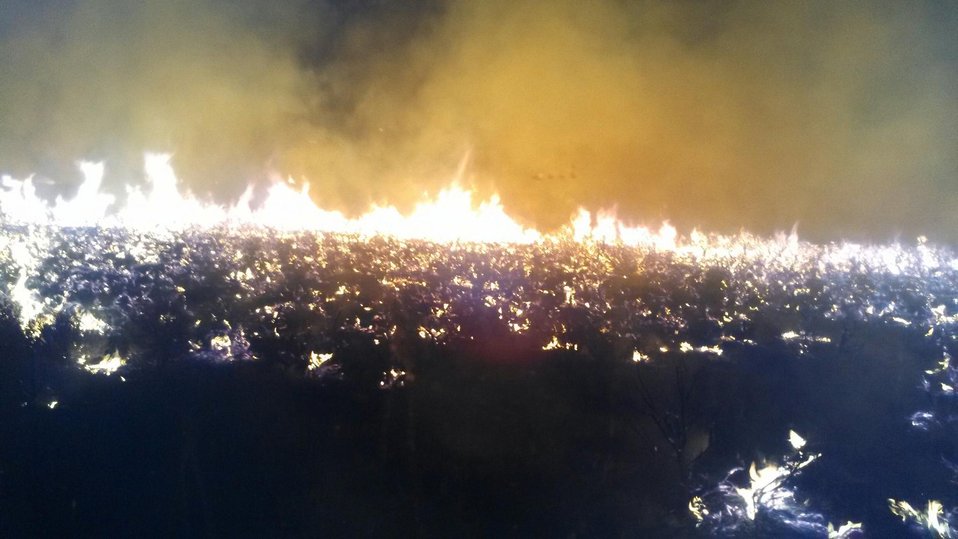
The Citadel Fire located 40 miles Northwest of Meeker, CO began on Jul. 26, 2013 by a lightning strike and has consumed approximately 1, 818 acres. The fire is approximately 10 % contained.